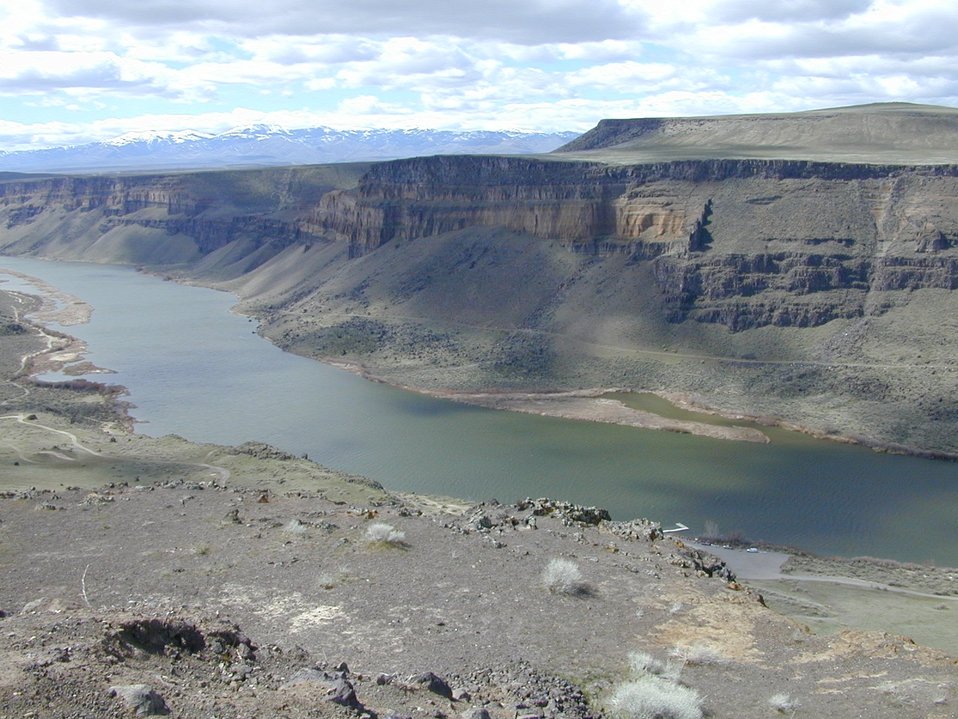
Scenic Snake River Birds of Prey National Conservation Area Lower Snake River District LSRD Snake River Canyon